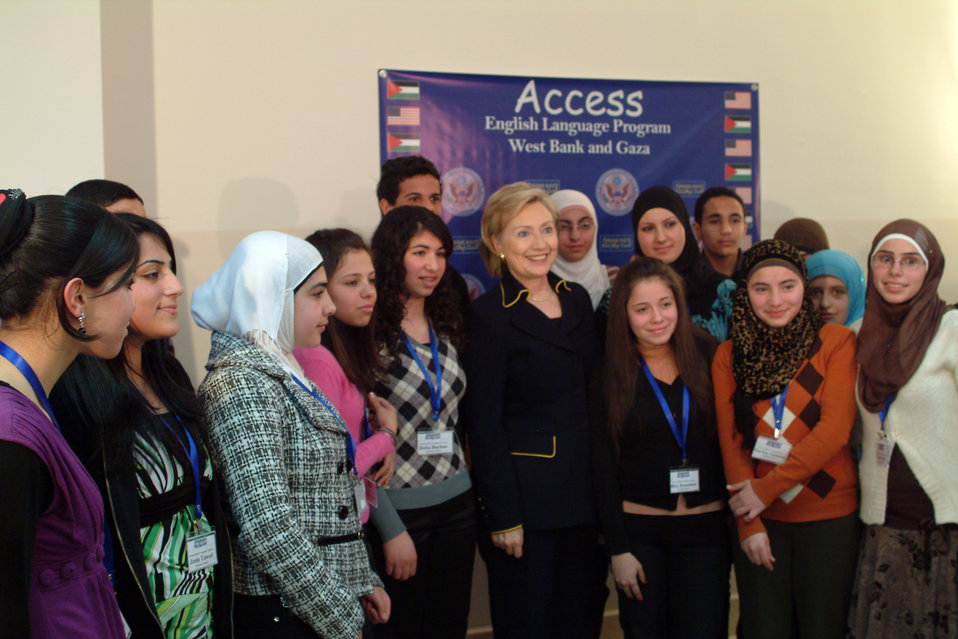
Secretary Clinton Attends Amideast Event

Secretary Clinton at an Amideast event in Ramallah March 4, 2009.